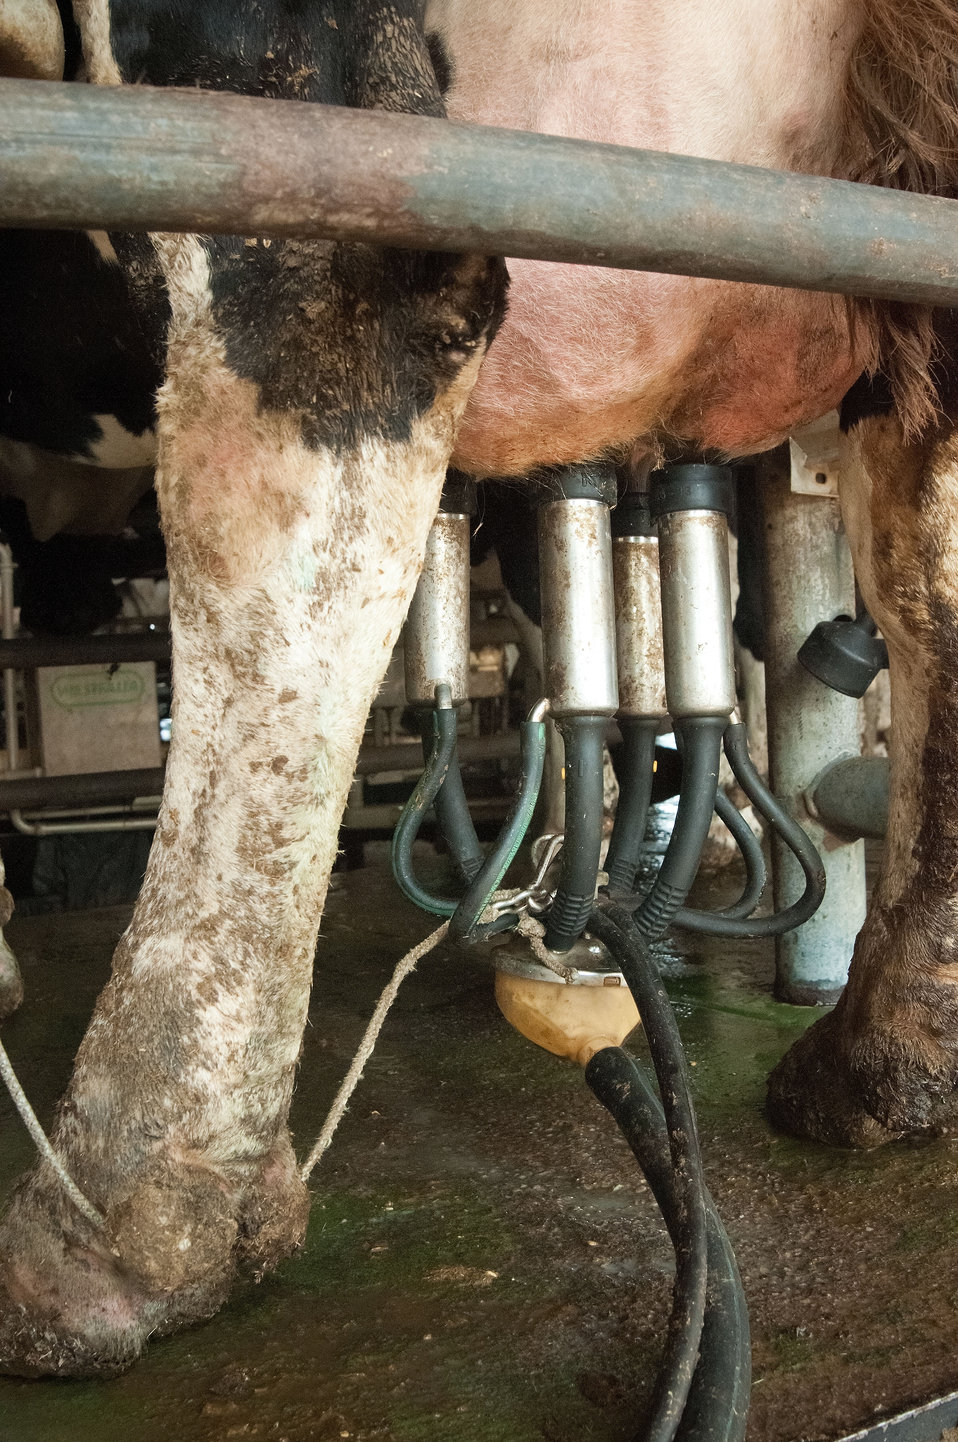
Holstein dairy cattle being milked at Pennwood Dairy Farms owned and operated by the Stoltzfus family in Berlin, PA. The cattle produce the source material, manure, for the anaerobic digester the dairy uses to produce energy for the dairy. The digester produces one million kilowatt hours; half of the energy needs of the farm, the other five hundred thousand kilowatt hours are sold back to the grid. An anaerobic digester is a component of a waste management system that provides biological treatment in the absence of oxygen. The digester captures biogas for energy production, manages odors, reduces the net effect of greenhouse gas emissions, and reduces pathogens. The anaerobic digester practice is part of a planned conservation management system that manages manure and/or comprehensive nutrient management system. Agriculture Secretary Tom Vilsack visited the dairy on Tuesday, July 17, 2012. During his visit Secretary Vilsack highlighted the U.S. Department of Agriculture’s (USDA) energy efficiency programs and announced a new effort to help rural consumers make affordable, energy-efficient improvements to their homes and businesses.